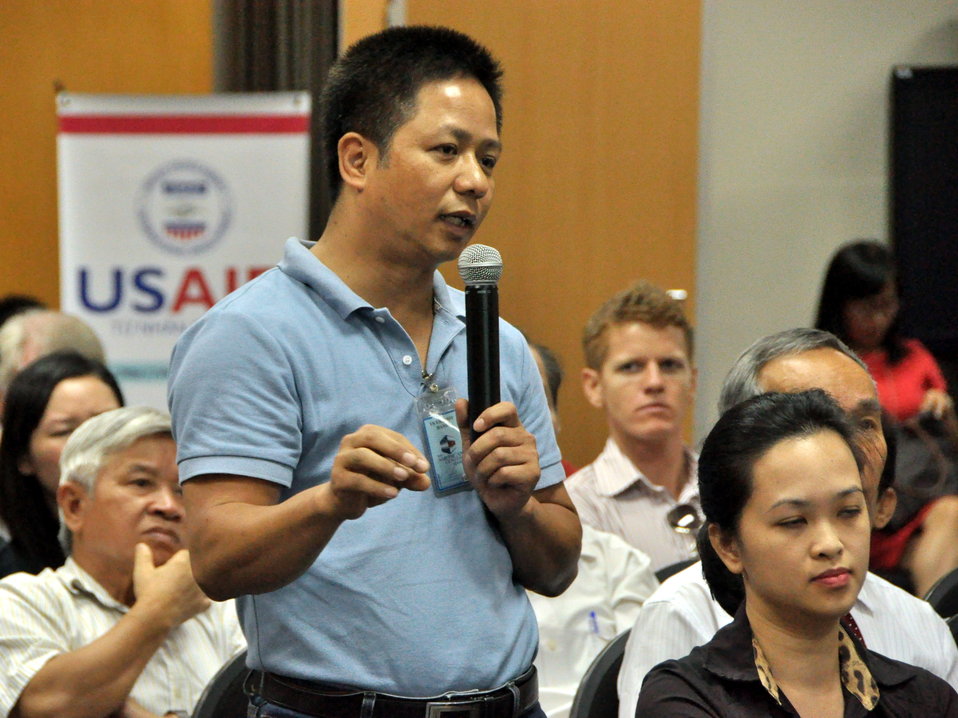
Development Grants Program Workshop in Hanoi

July 24, 2013